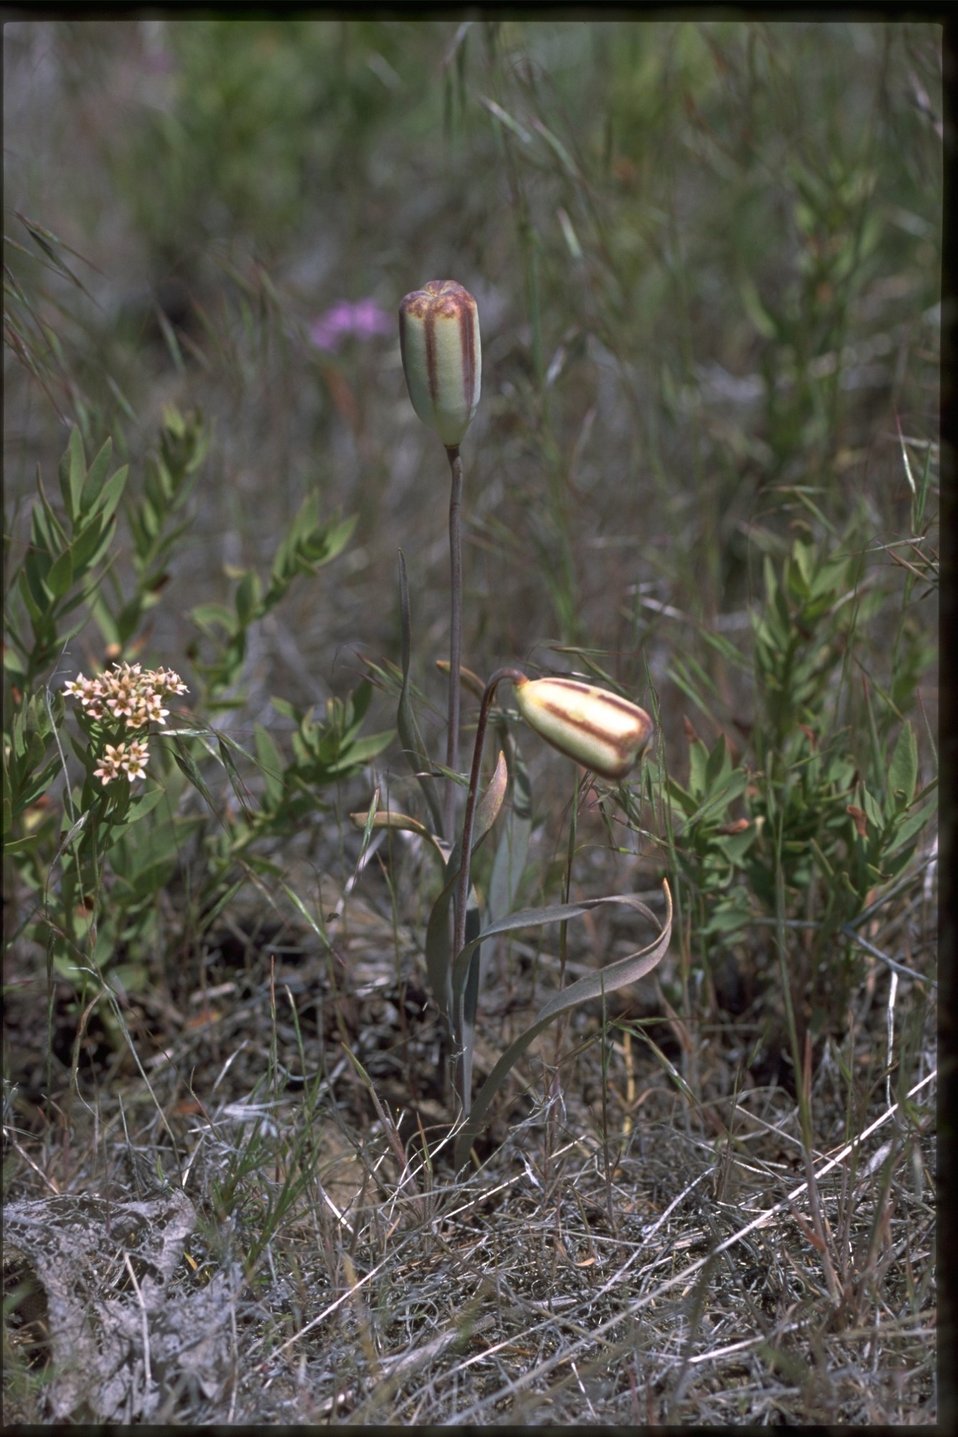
Farshot of Fritillaria pudica.